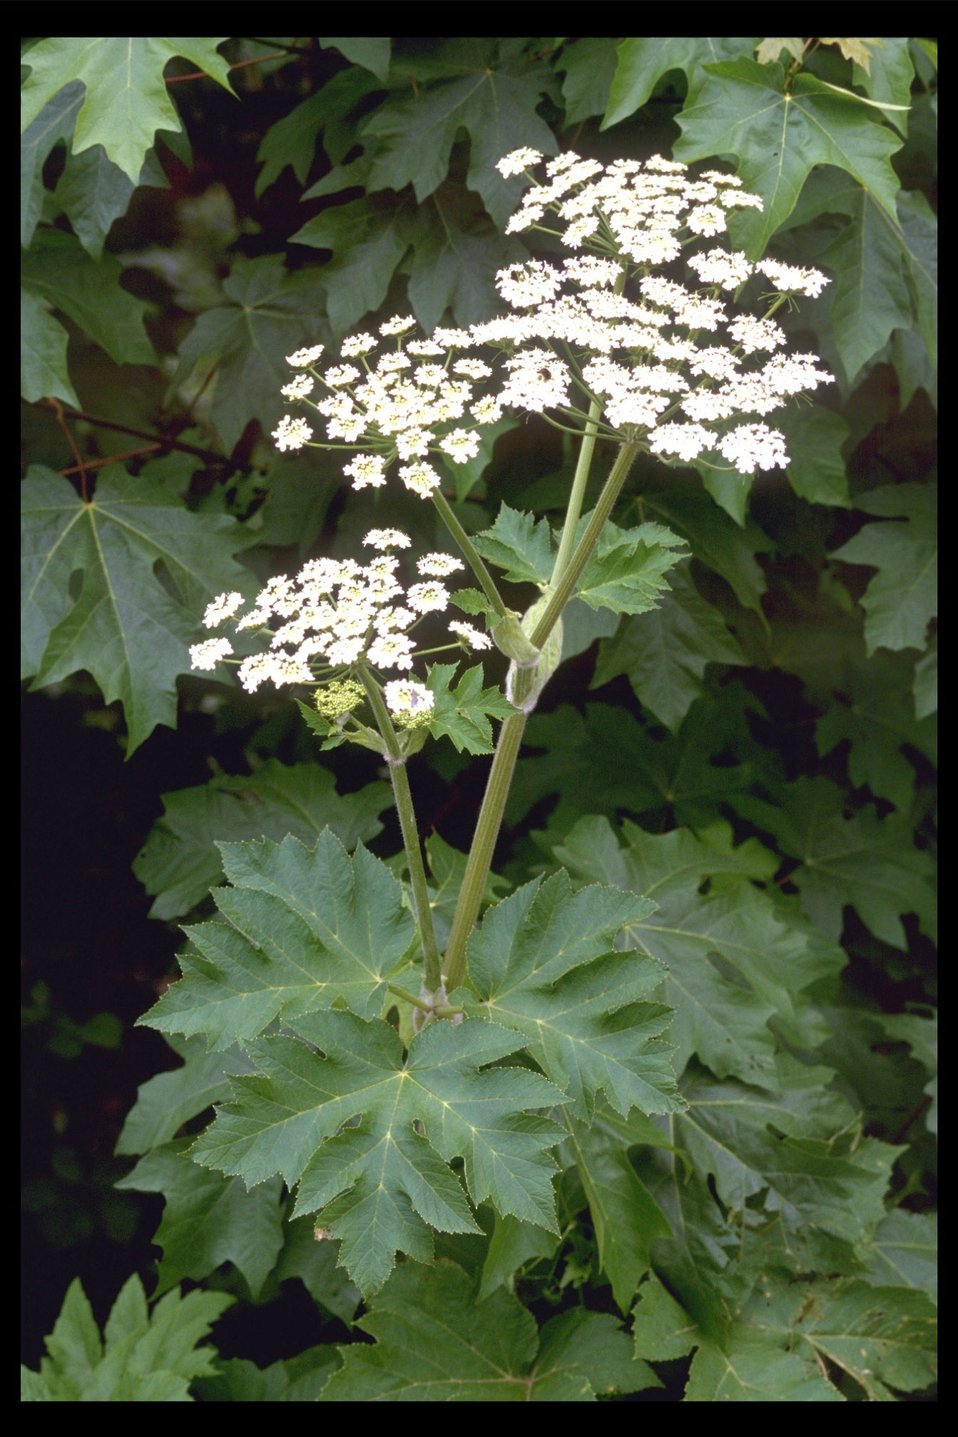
Cow Parsnip (Heracleum lantum) at Trail Creek.